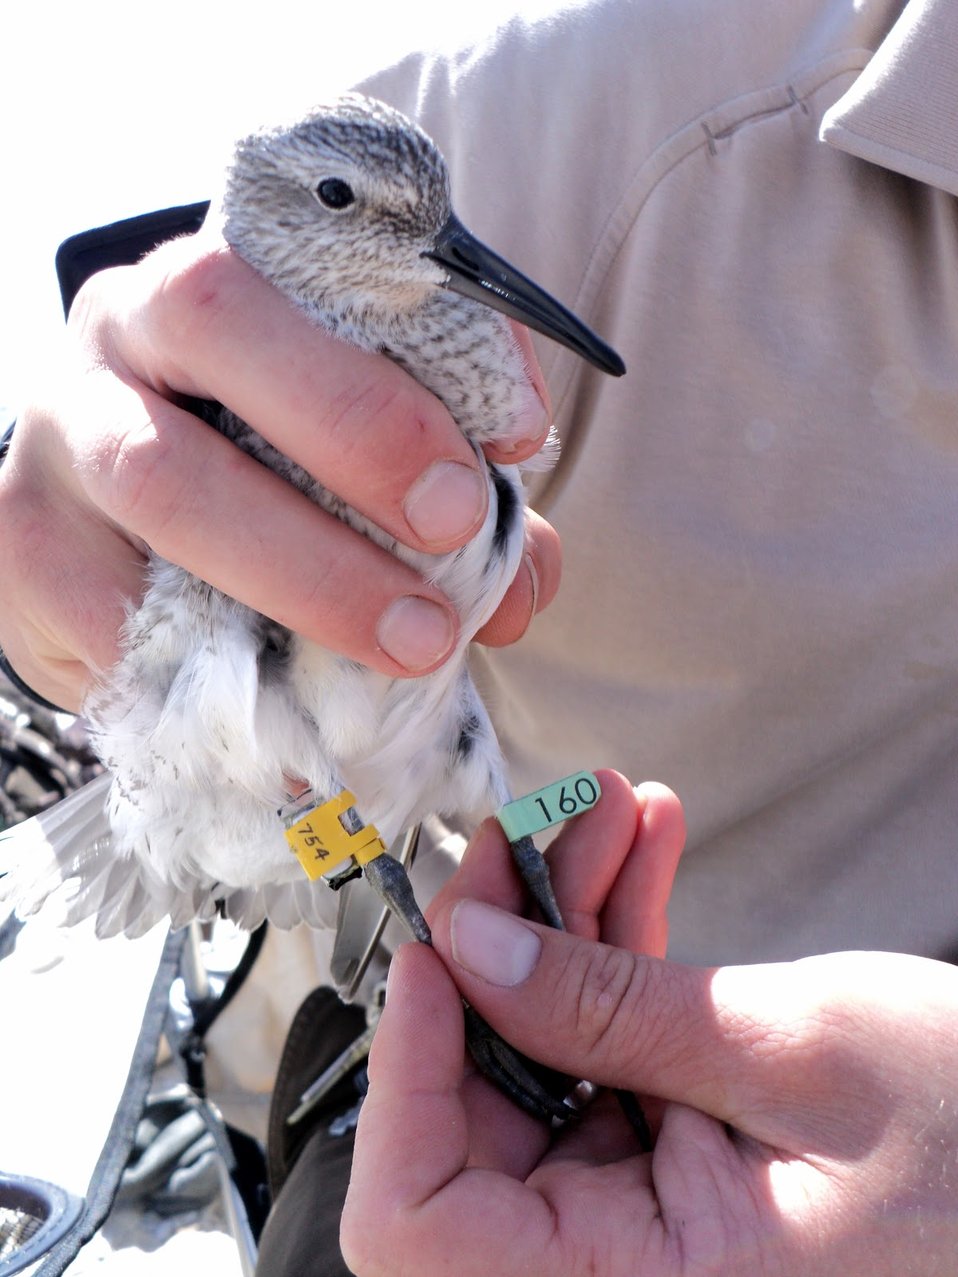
Red Knot with Geolocator

A juvenile red knot ready for release, with a geolocator on one leg and a lime green flag on the other leg.